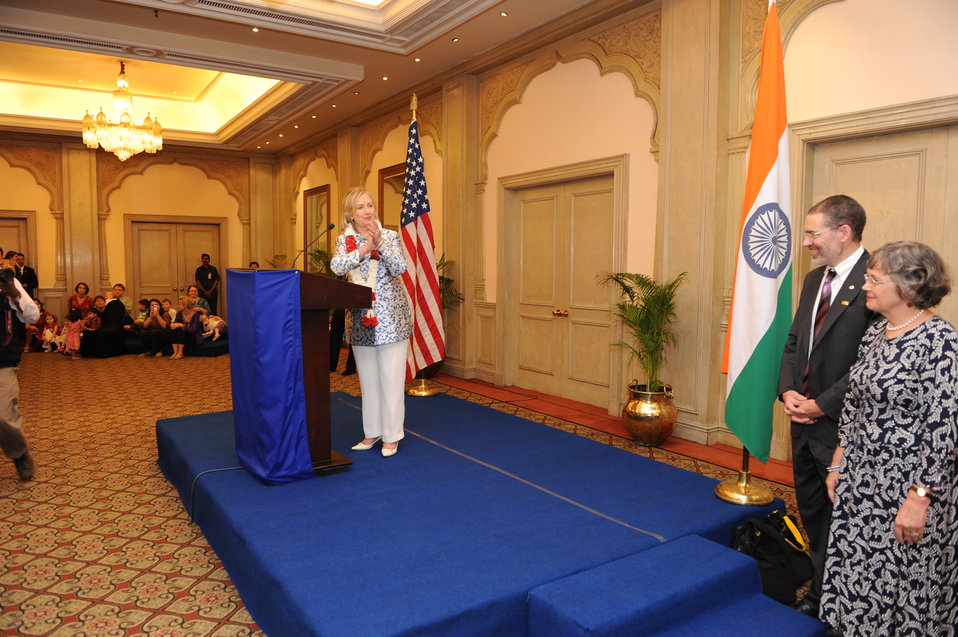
Secretary Clinton Delivers Remarks to Staff and Family Members of U.S. Consulate General in Chennai, India

U.S. Secretary of State Hillary Rodham Clinton delivers remarks to staff and family members of U.S. Consulate General in Chennai, India, at the Taj Coromandel in Chennai, India, on July 20, 2011. [Paul Cohn/ State Department photo]